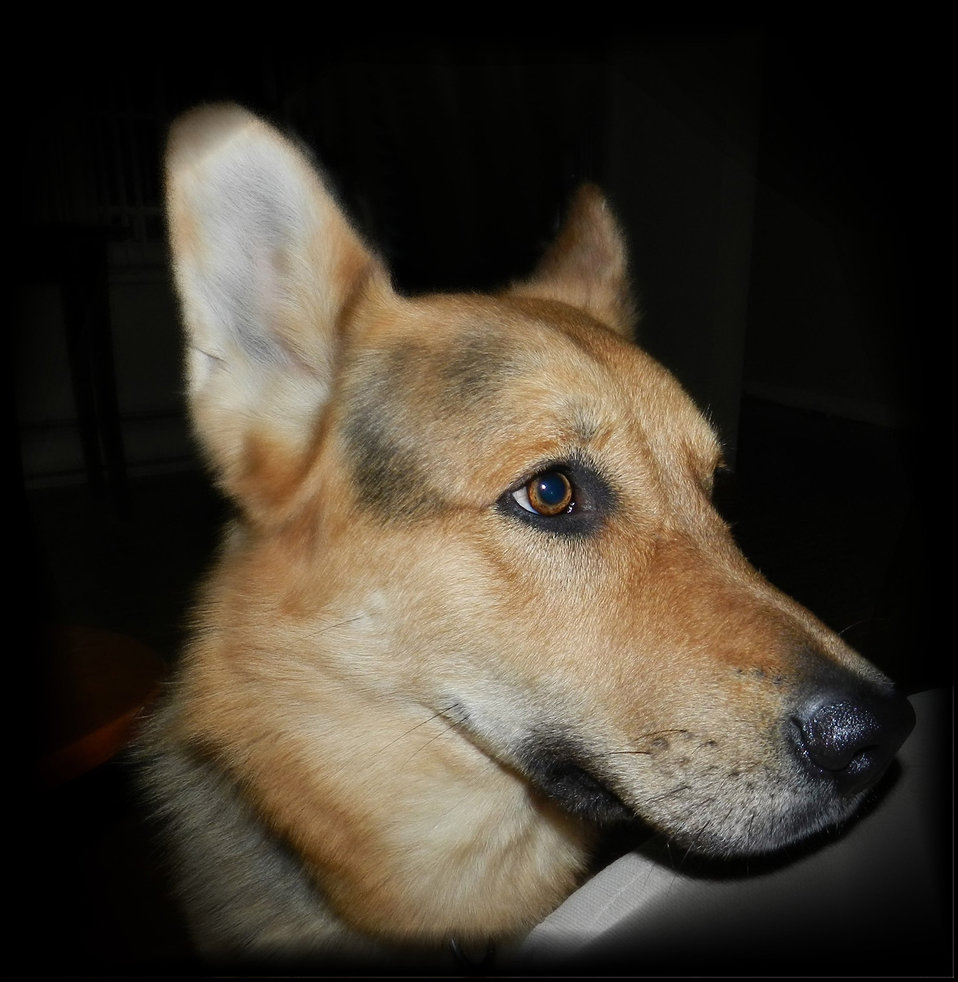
Shadow 2012 (2)

Dog german shepherd.